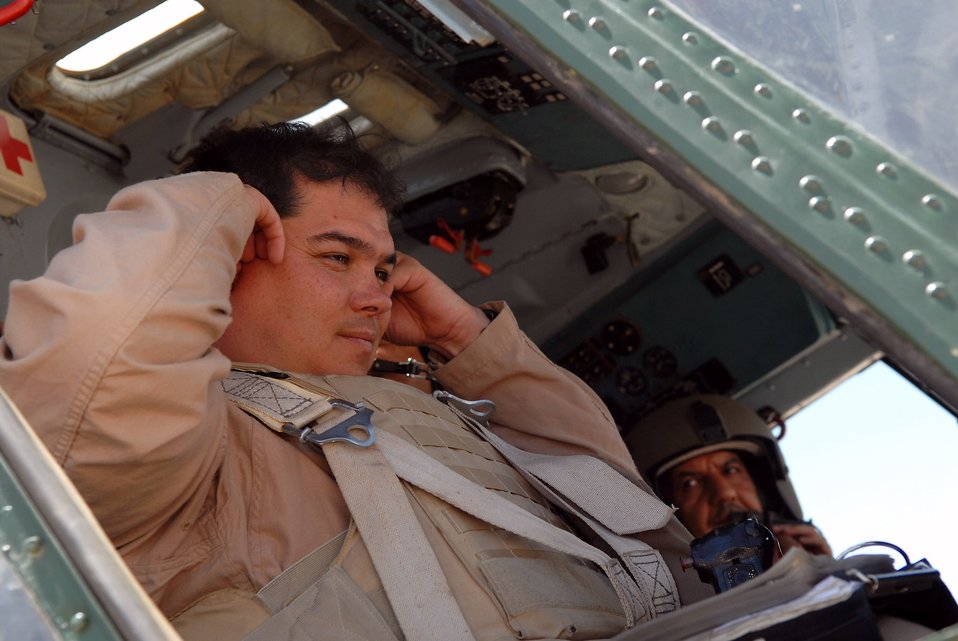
Airman volunteers for 18-month deployment to help Iraq

Maj. Jiro McCoy prepares to take off on a training mission May 29 over Camp Taji, Iraq. The major is a member of the 770th Air Expeditionary Advisory Squadron, which is part of the Coalition Air Force Transition Team in Iraq. The unit's mission is to assess, advise, educate, train and assist the Iraqi air force helicopter wing personnel on providing counter insurgency operations via air support. Major McCoy is deployed from Fort Rucker, Ala. and has been deployed for more than 18 months.